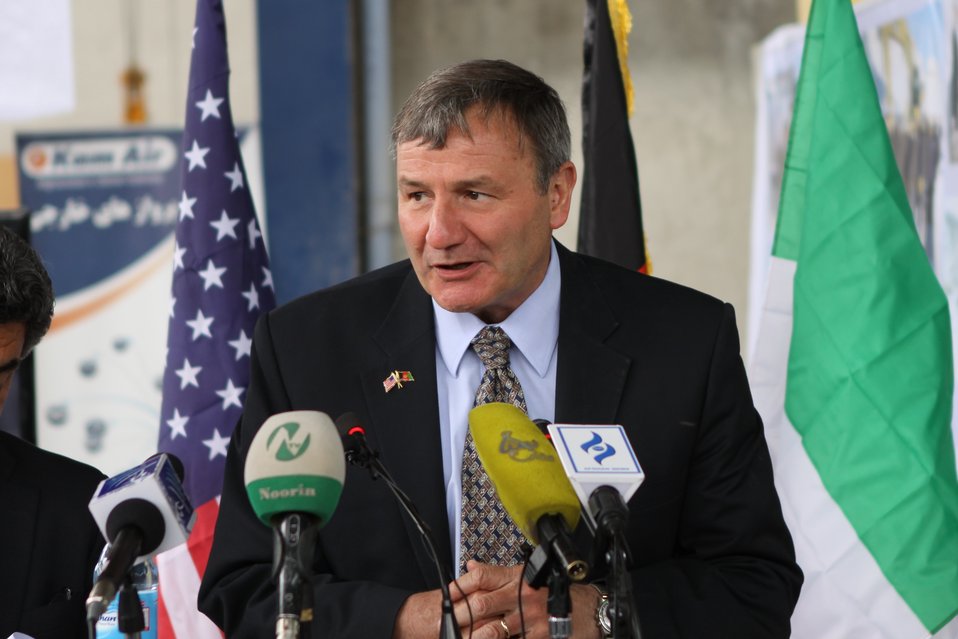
100525 Hirat Marble Conference 226